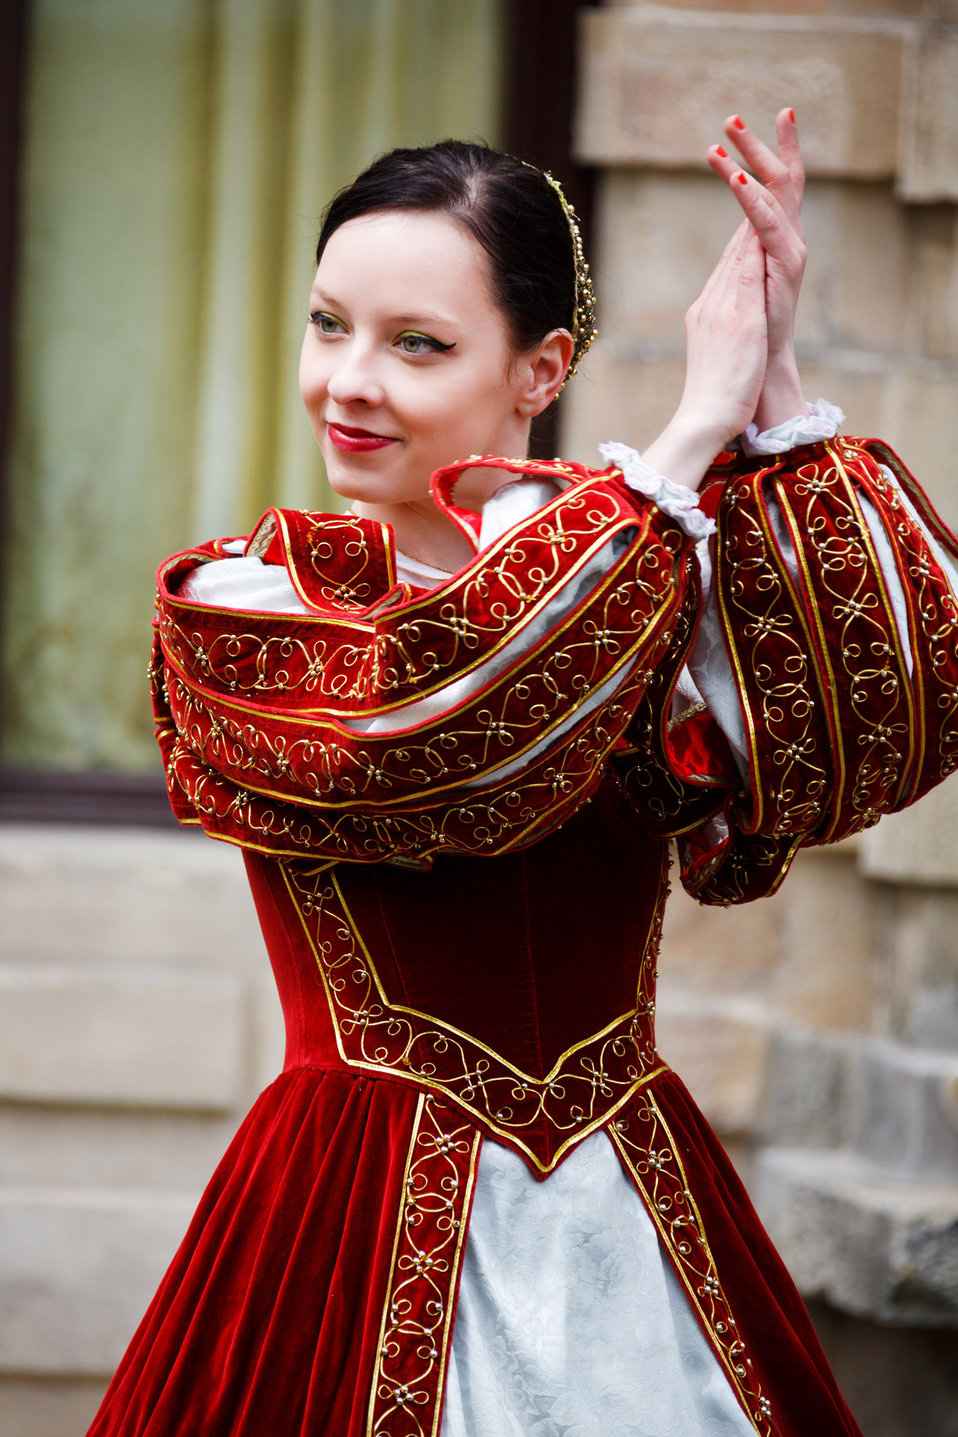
Medieval dancer

Beautiful medieval dancer.